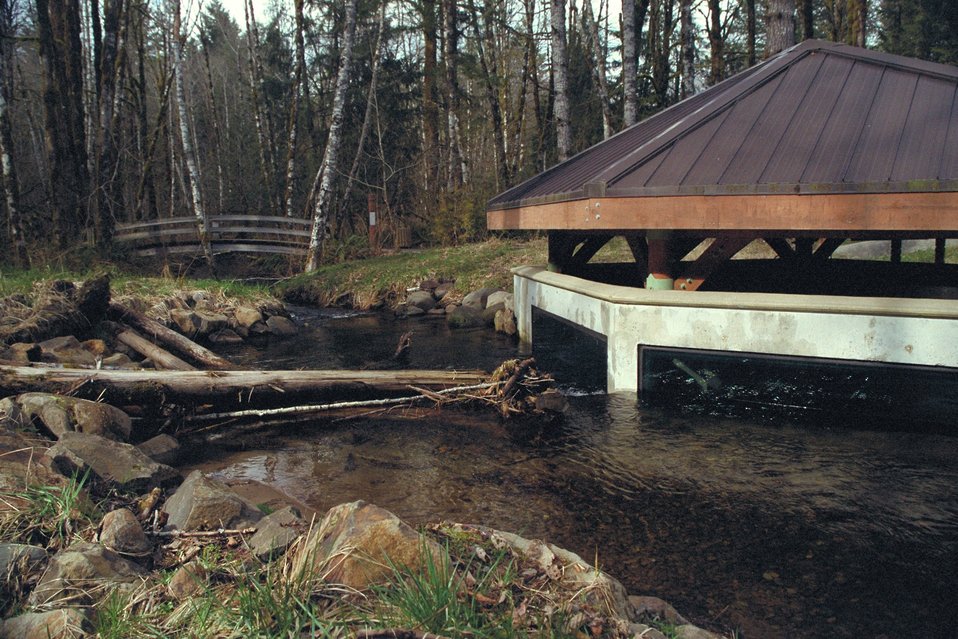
Cascade Stream Watch is an environmental education program conducted at BLM's Wildwood Recreation site.